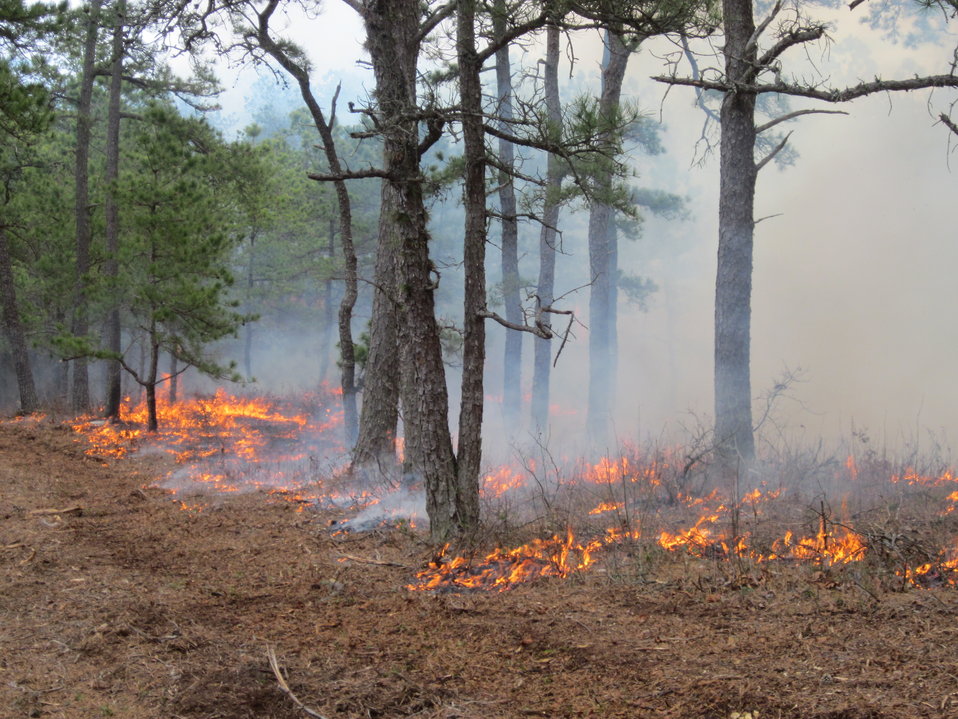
Fire Maintains Pitch Pine Habitats

Mashpee, Massachusetts, April 5, 2012. A controlled burn does what nature once did in pitch pines at the Town of Mashpee Holland Hill Barrens area of Mashpee National Wildlife Refuge. The burn cleared overgrown brush under fire-resistant pitch pine trees, which will reduce fire risk to neighboring homes. It will also stimulate growth of oak stems, important for the rare New England cottontail. The burn was conducted by the Town of Mashpee, U.S. Fish and Wildlife Service, State of Massachusetts Department of Conservation and Recreation, and Northeast Forest and Fire Management.